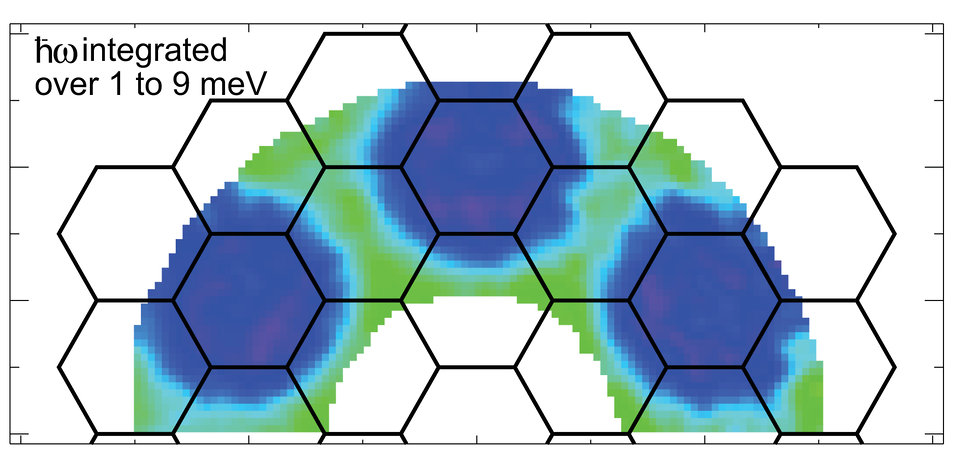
Herbertsmithite Crystals

This image depicts magnetic effects within Herbertsmithite crystals, where green regions represent higher scattering of neutrons from NIST's Multi-Angle Crystal Spectrometer (MACS). Scans of typical highly-ordered magnetic materials show only isolated spots of green, while disordered materials show uniform color over the entire sample. The in-between nature of this data shows some order within the disorder, implying the unusual magnetic effects within a spin liquid.